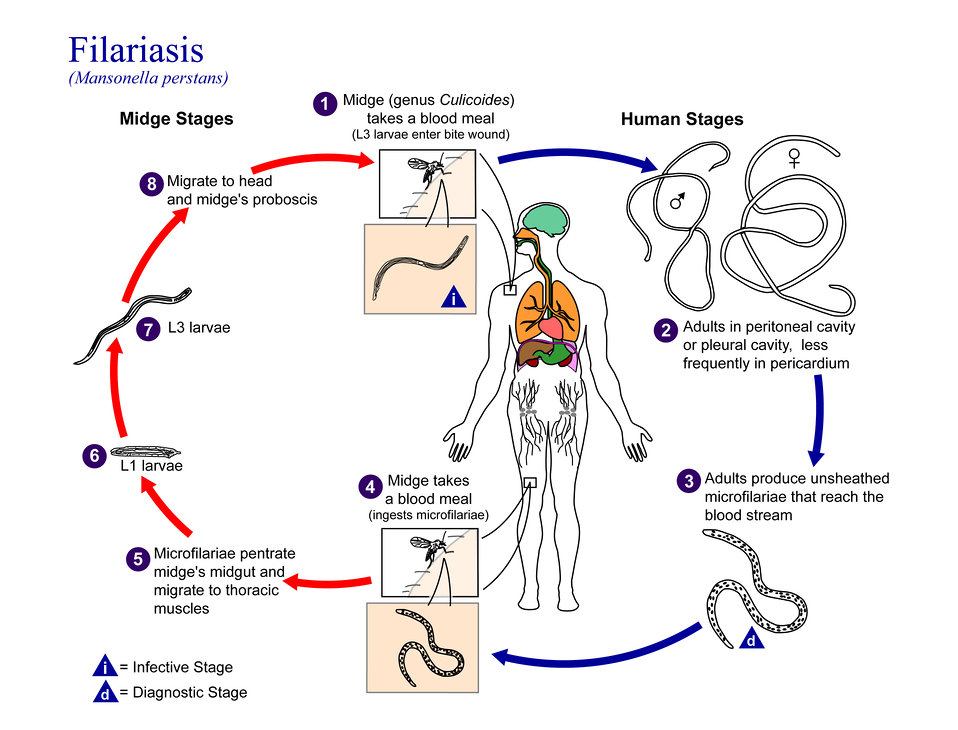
This is an illustration of the life cycle of Mansonella perstans, one of the causal agents of Filariasis.